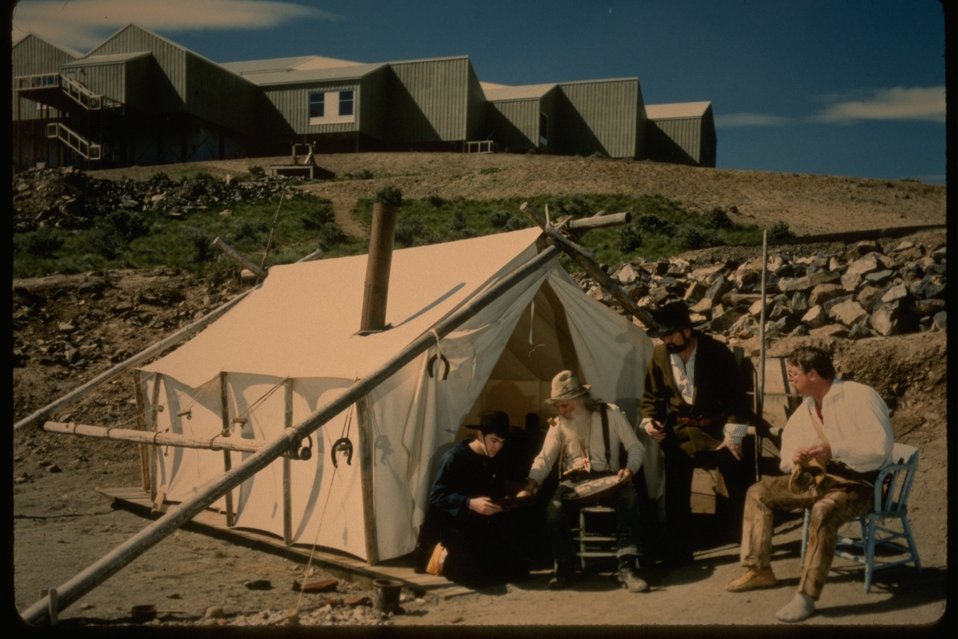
Mining re-enactment at the NHOTIC.